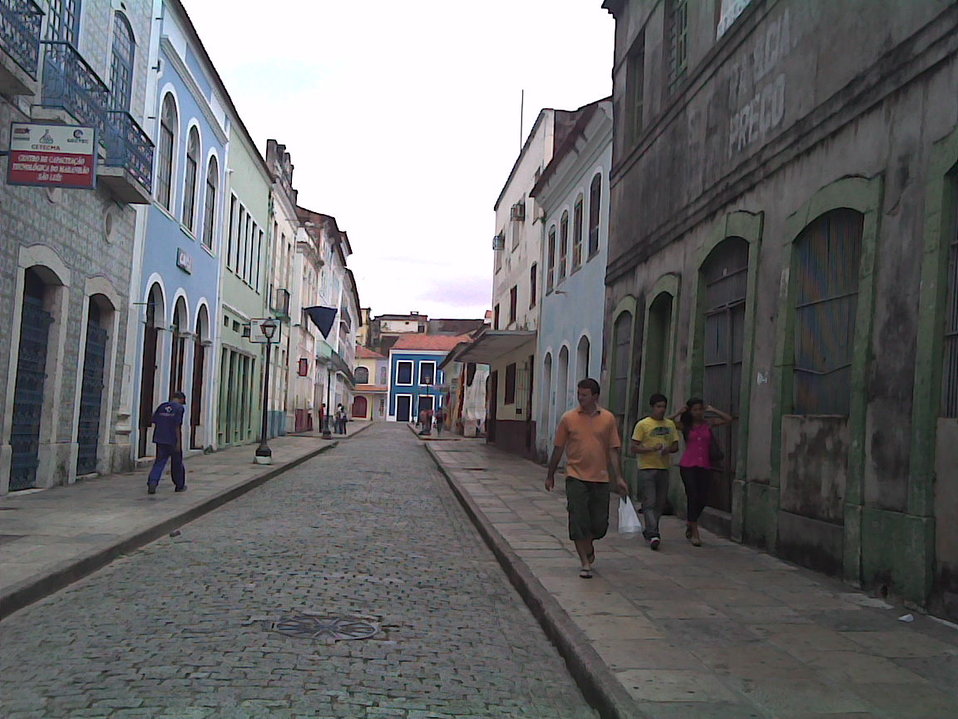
Português: Rua do Centro Histórico de São Luís, próximo à Praia Grande. Street of the Historical Centre of São Luís, near to Praia Grande. Español: Calle del centro histórico de São Luís, cerca de la Praia Grande.